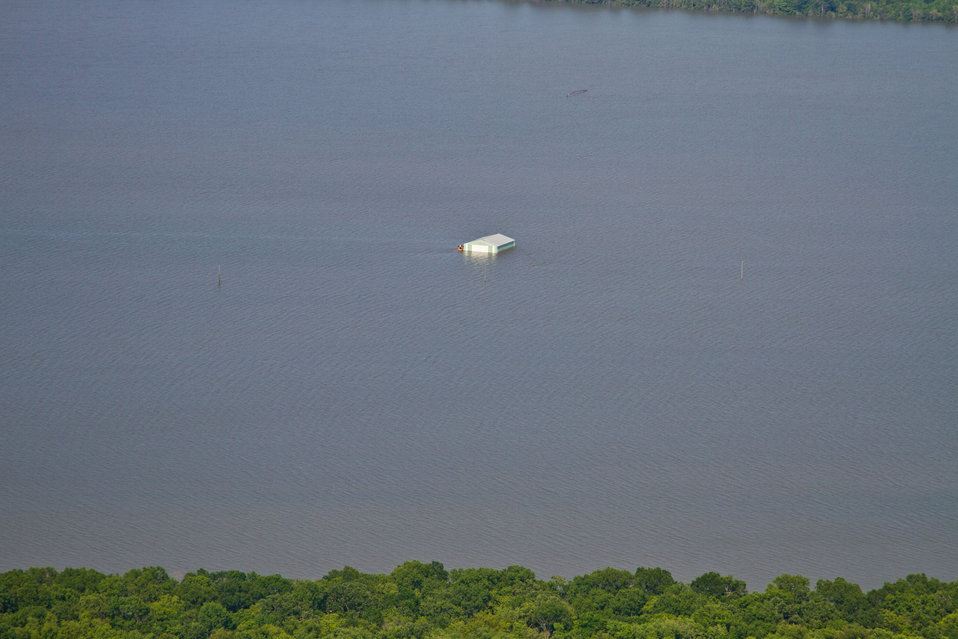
Aerial view of Mississippi River flood of farms, wilderness, and populated areas, on Thursday, May 19, 2011. from the MS side. Aerial platform was a UH-60 Blackhawk commanded by Col. Kennedy and his flight crew from the Army Aviation Support Facility #1 at Hawkins Field in Jackson, MS.